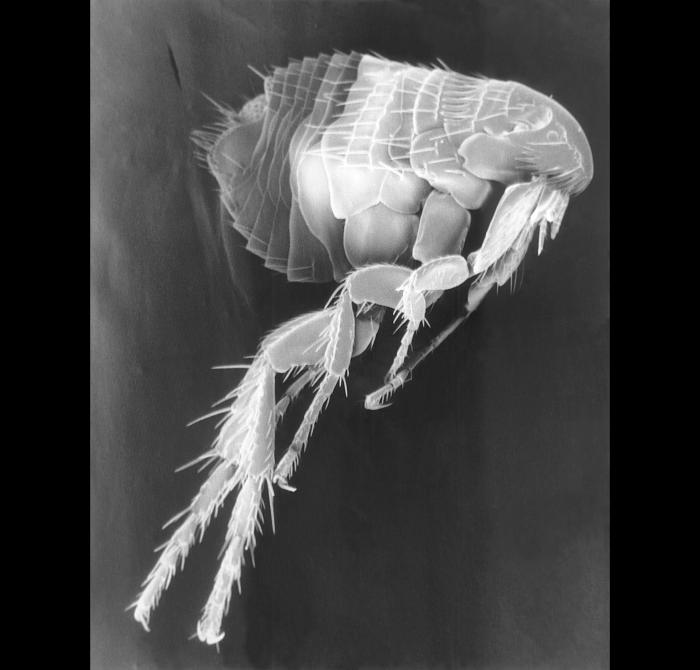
Scanning electron micrograph (SEM) of a parasitic flea. See PHIL 11436 for a colorized version of this image.